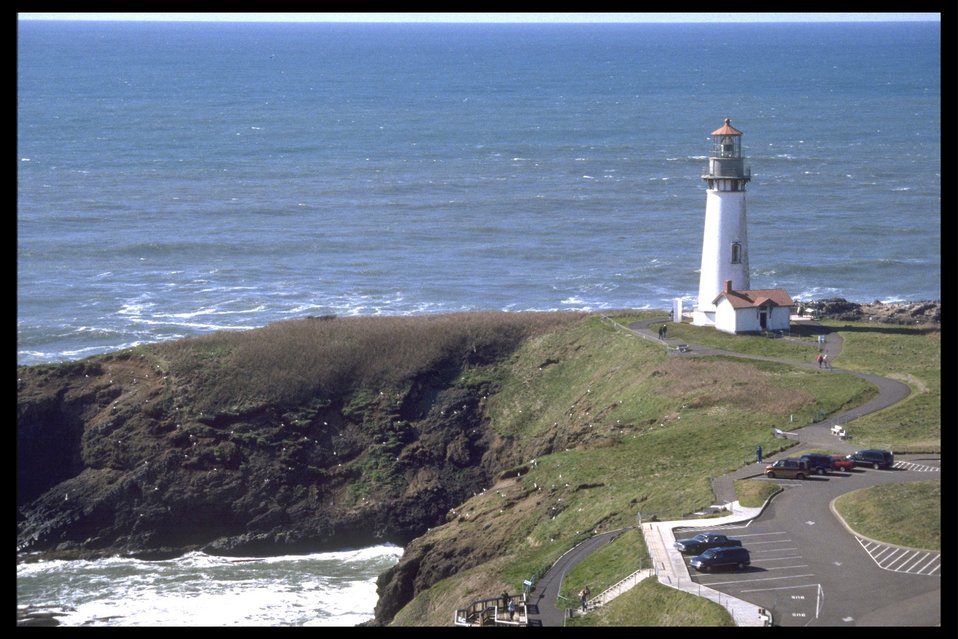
Yaquina Head Lighthouse.